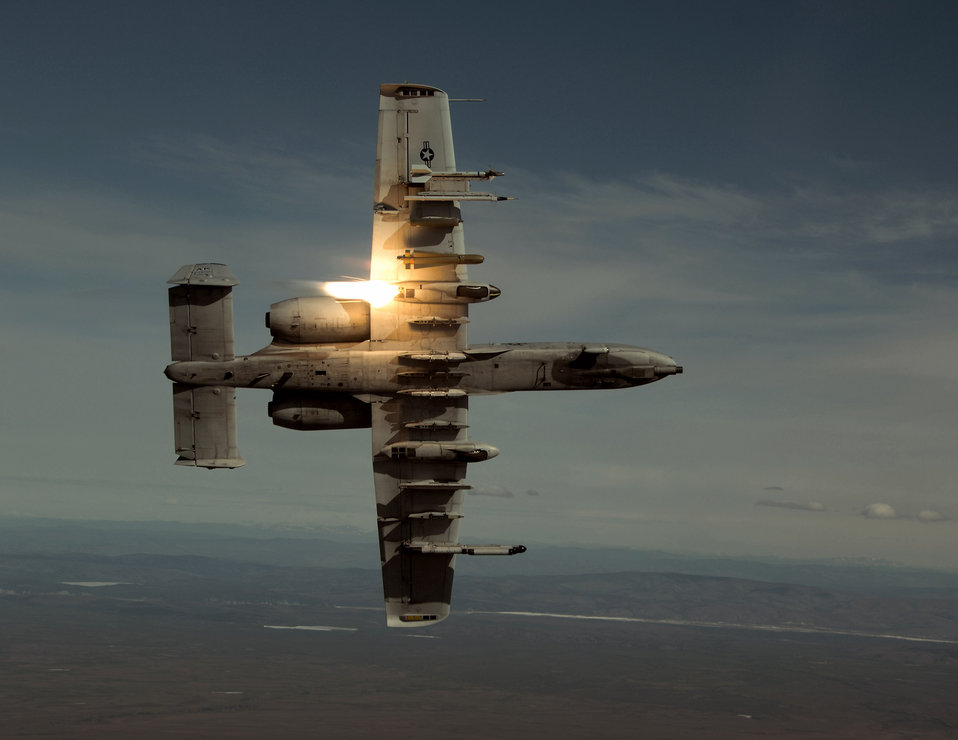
Oct. 15 airpower summary: A-10s support ground forces

An A-10 Thunderbolt II, like this one, performs sorties daily providing top cover for ground forces in Southwest Asia. A-10s provide close-air support and employ a wide variety of conventional munitions, including general purpose bombs, cluster bombs units and laser guided bombs.